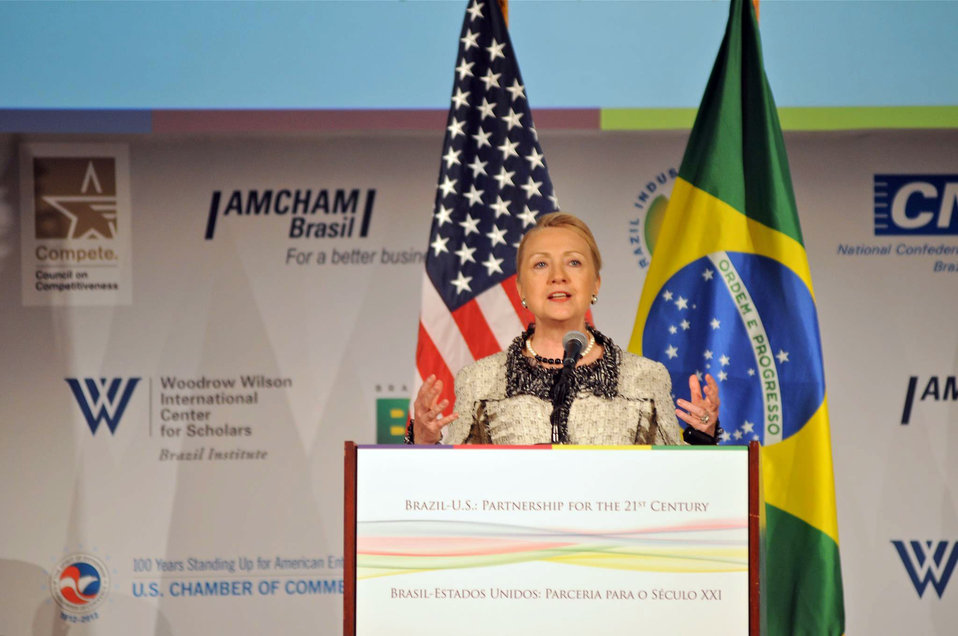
Secretary Clinton Delivers Remarks on U.S.-Brazil Partnership

U.S. Secretary of State Hillary Rodham Clinton delivers the opening remarks at the 'Brazil-U.S.: Partnership for the 21st Century' event, a day-long conference hosted by the Government of Brazil at the U.S. Chamber of Commerce in Washington, D.C., on April 9, 2012.